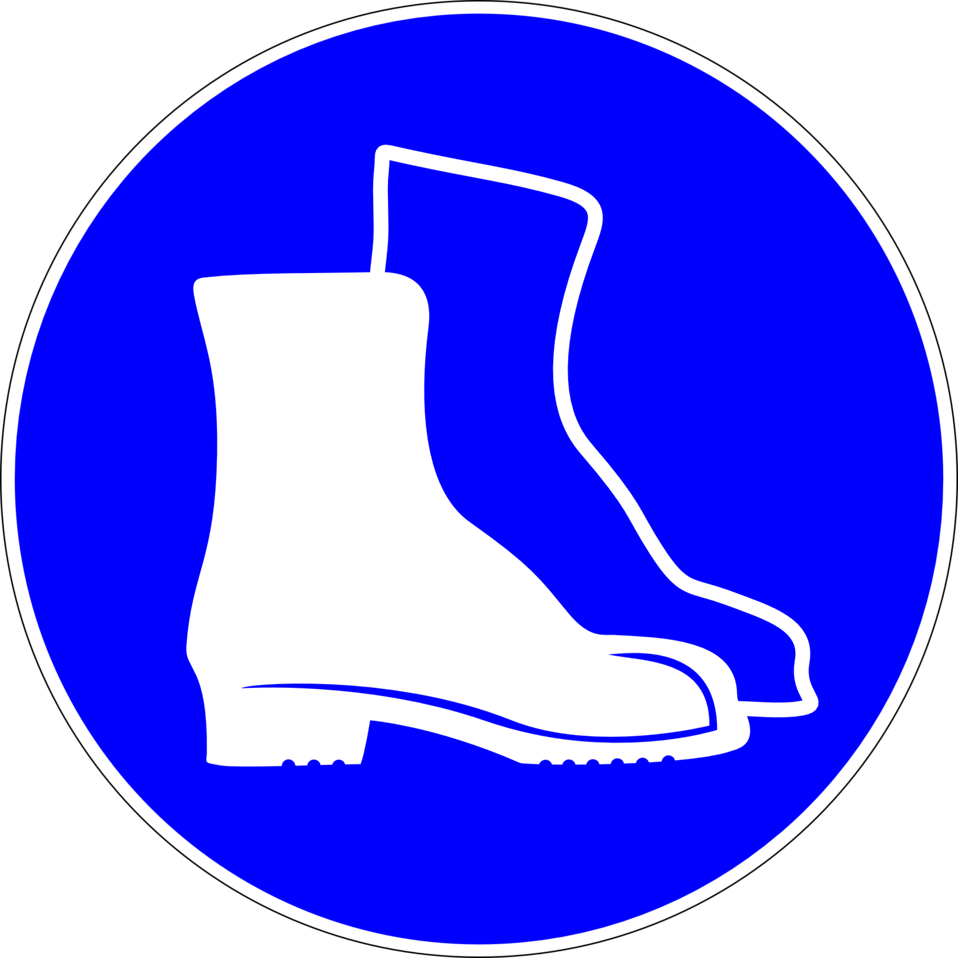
Deutsch: Fußschutz benutzen, Gebotszeichen D-M005 nach DIN 4844-2 Use protective footwear, mandatory action sign sign D-M005 according to German standard DIN 4844-2